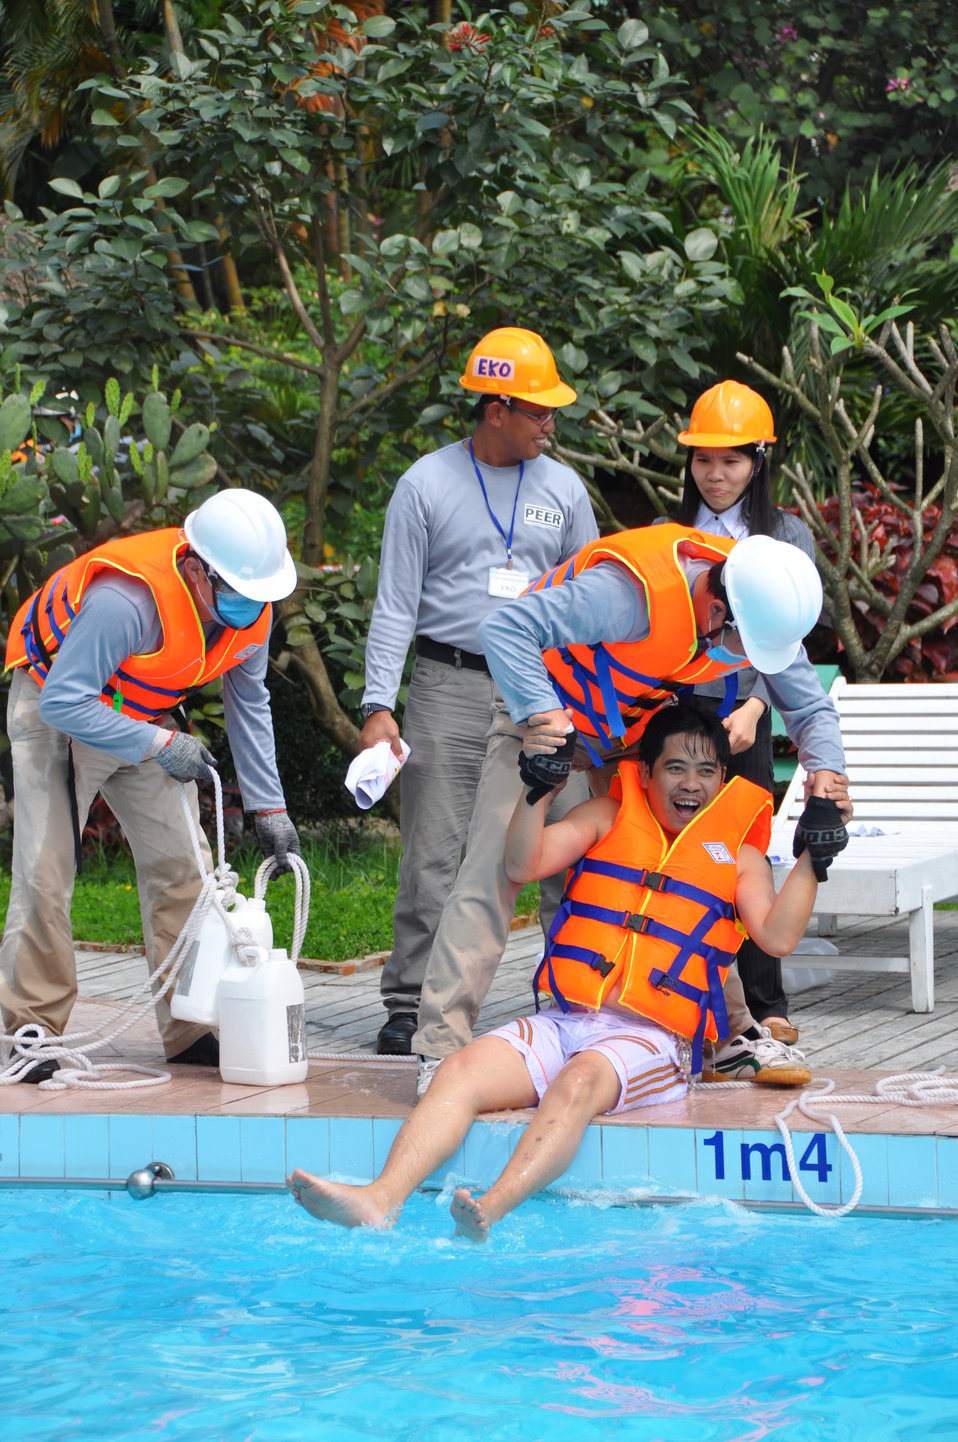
Disaster and Emergency Training Funded by USAID in Hue, Vietnam